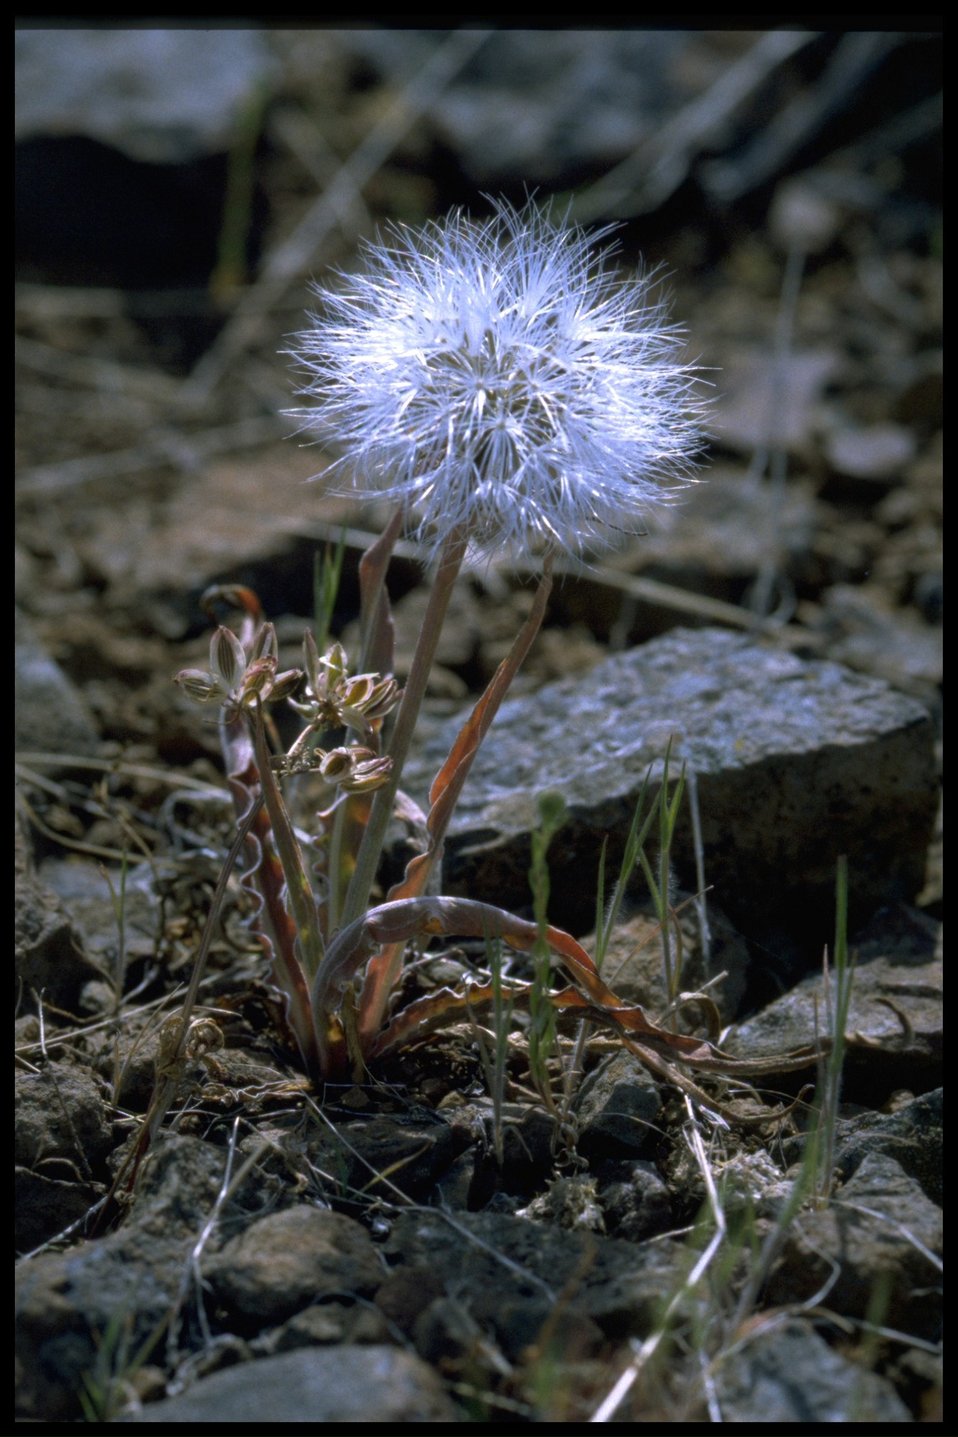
Closeup shot of False Agoser wildflower in fruit.